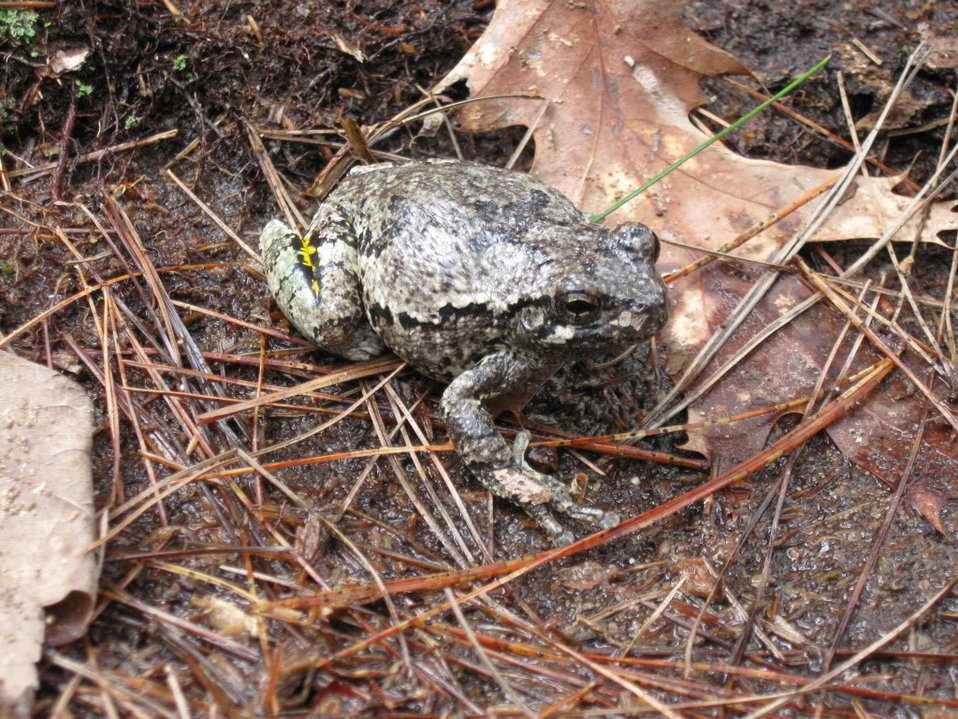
Gray treefrog

Healthy Gray treefrog at Assabet River National Wildlife Refuge.

Credit: Zachary Cava/USFWS

Assabet River National Wildlife Refuge is part of the Eastern Massachusetts National Wildlife Refuge Complex.